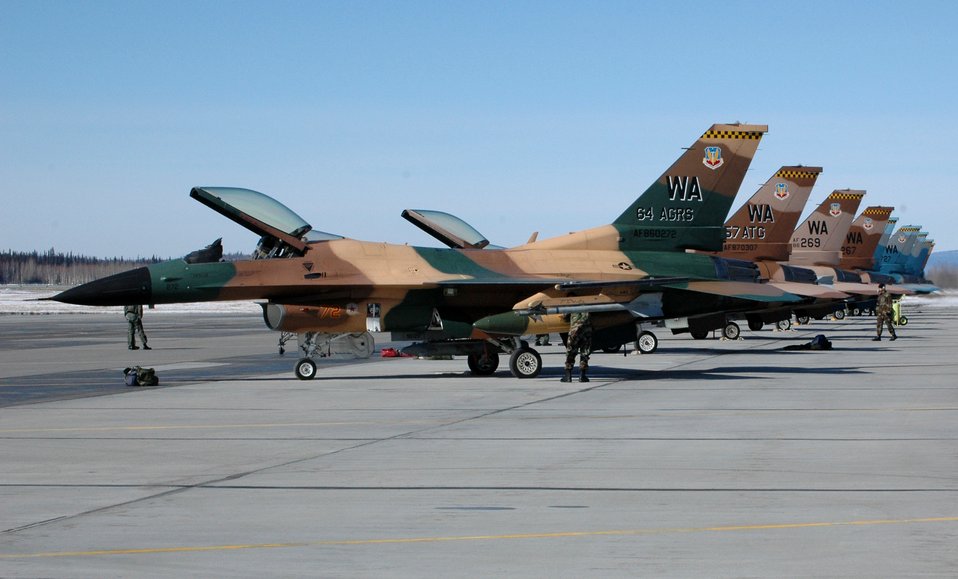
Red Flag - Alaska

F-16 Fighting Falcons from the 64th Aggressor Squadron at Nellis Air Force Base, Nev., line the flightline at Eielson AFB, Alaska, on Tuesday, April 18, 2006, for Red Flag - Alaska. The exercise, formerly known as Cope Thunder, provides joint offensive counter-air, interdiction, close-air support and large-force employment training in a simulated combat environment. Red Flag - Alaska runs through May 5.